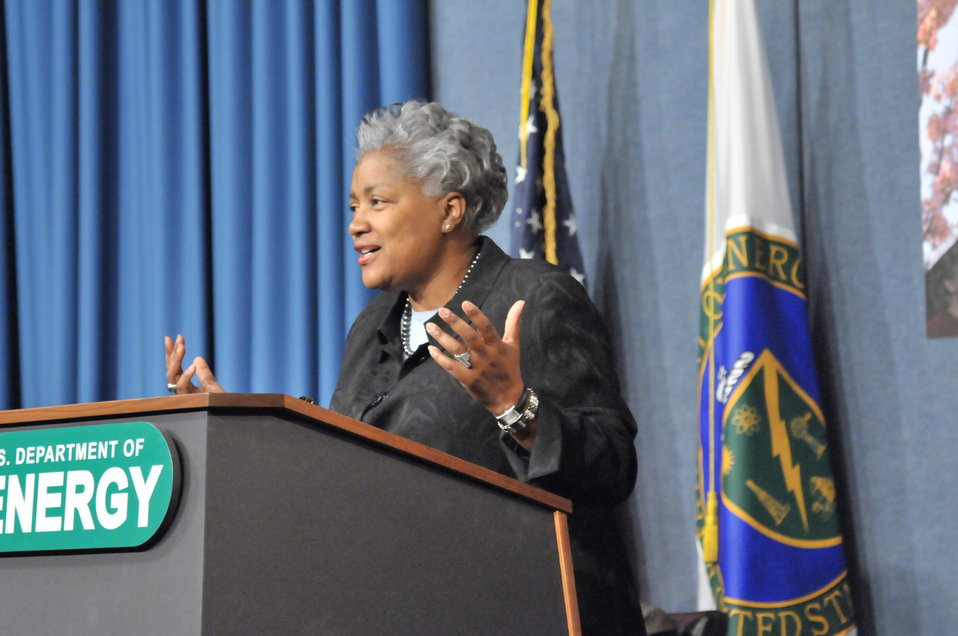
DEPARTMENT OF ENERGY -MARTIN LUTHER KING / BLACK HISTORY MONTH COMMEMORATIVE PROGRAM WITH DOE SECRETARY E. MONIZ IN ATTENDANCE